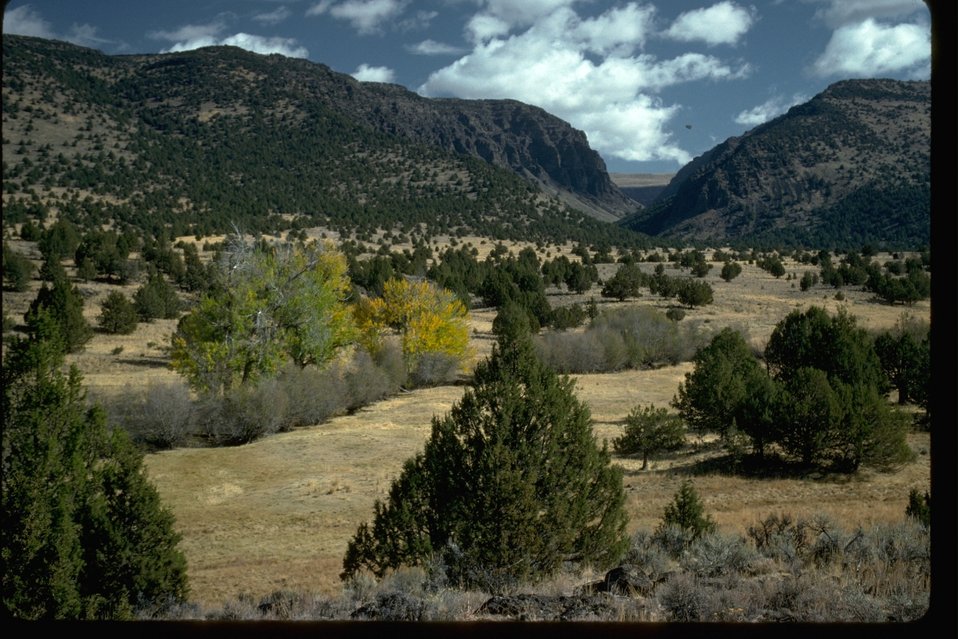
Little Blitzen Valley and part of the Riddle Brothers Ranch historic district.